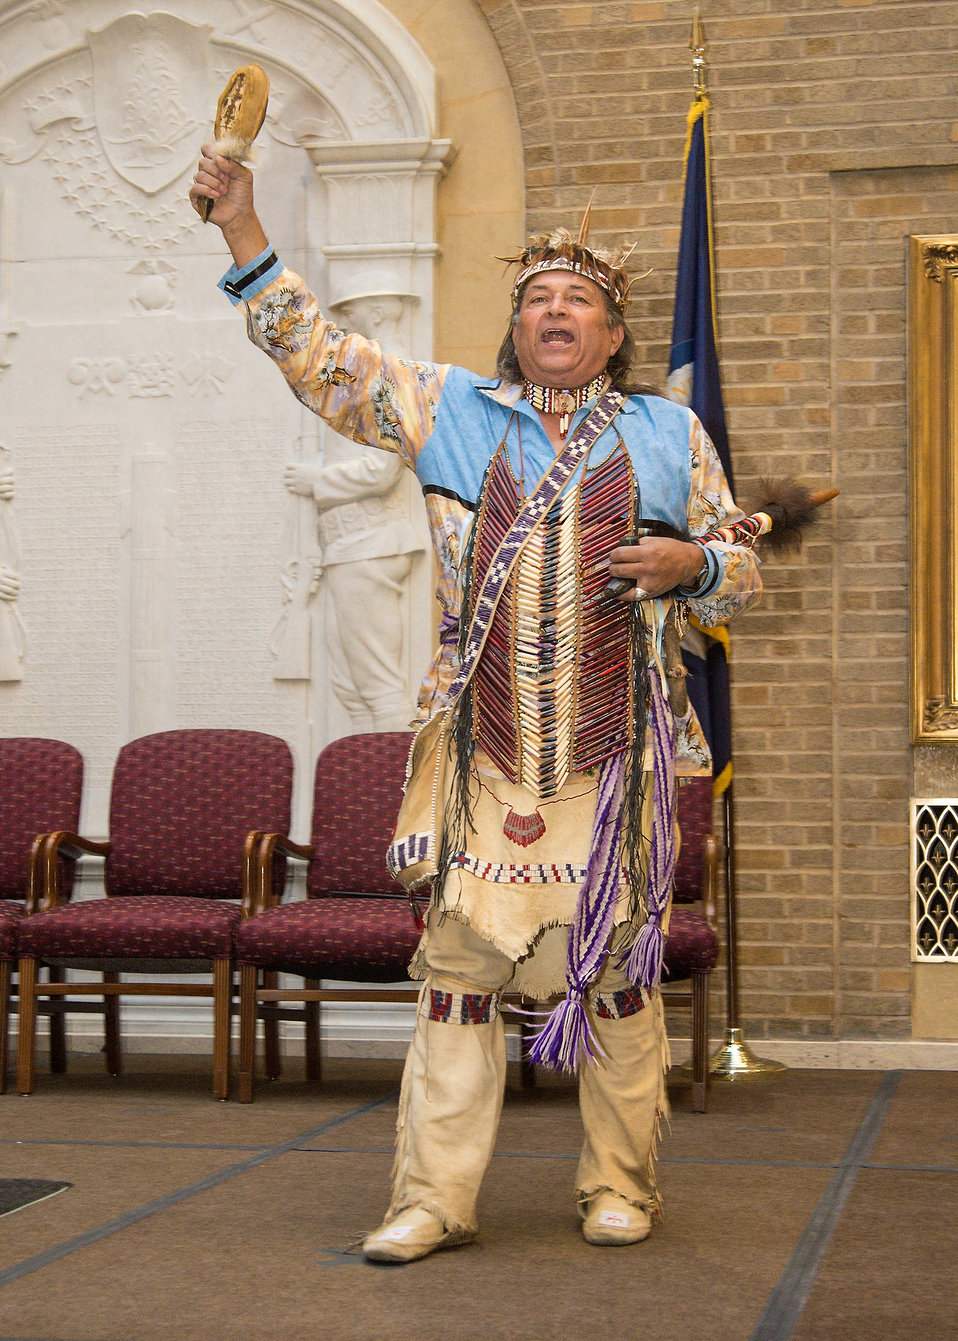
Cheroenhaka Nottoway Indian Tribe Chief Walter D. “Red Hawk” Brown III presents a history of the First American Tribes of Virginia at the 2013 American Indian and Alaska Native Heritage Observance at the U.S. Department of Agriculture (USDA), on Thursday, Nov. 14, 2013 in Washington, D.C. The theme of this year’s event was “Guiding Our Destiny with Heritage and Traditions.”